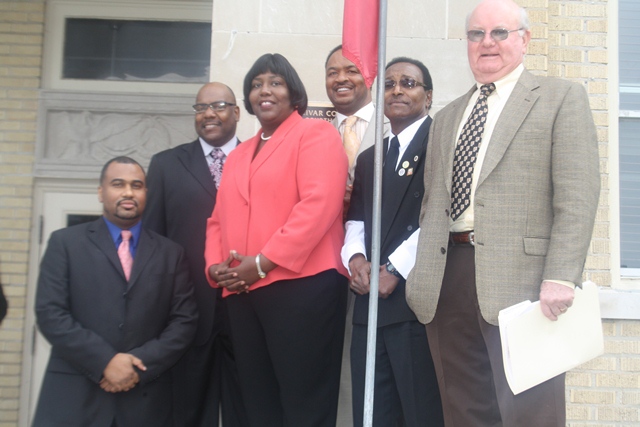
Pictured from left to right: William Hooker, Bolivar County Administrator, District 5 Supervisor Larry L. King, USDA Rural Development State Director Trina George, District 1 Supervisor and President Andrew Williams, District 3 Supervisor Preston Billings and District 2 Supervisor Donny Whitten are pictured on the steps of the newly restored courthouse.